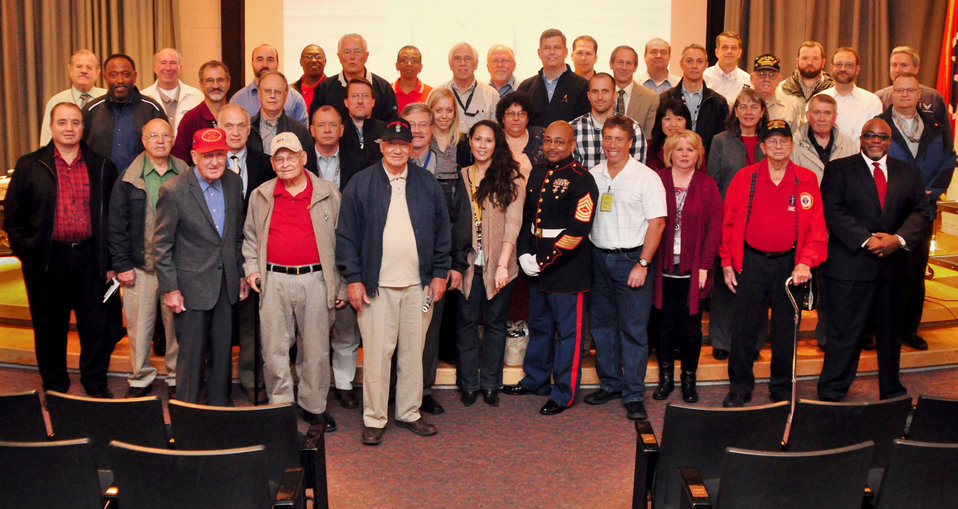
Veteran's Group at DOE ORO Veteran's Program Oak Ridge 2013

13-129 DOE photo Lynn Freeny 11-7-2013 Veterans at Veteran's Program at AMSE Oak Ridge Tennessee